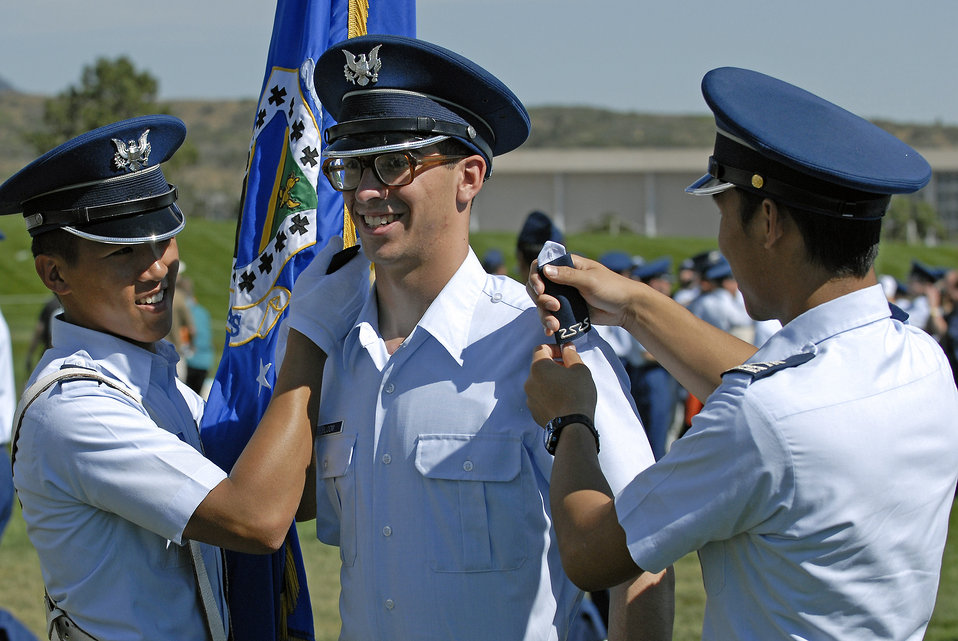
Academy cadets participate in Acceptance Day parade

U. S. Air Force Academy Cadet 4th Class Louis Bloom receives his shoulder boards from squadron 38 upper classmen Aug 6 after the Acceptance Day Parade held on the Stillman Parade Feld at the U.S. Air Force Academy in Colorado.